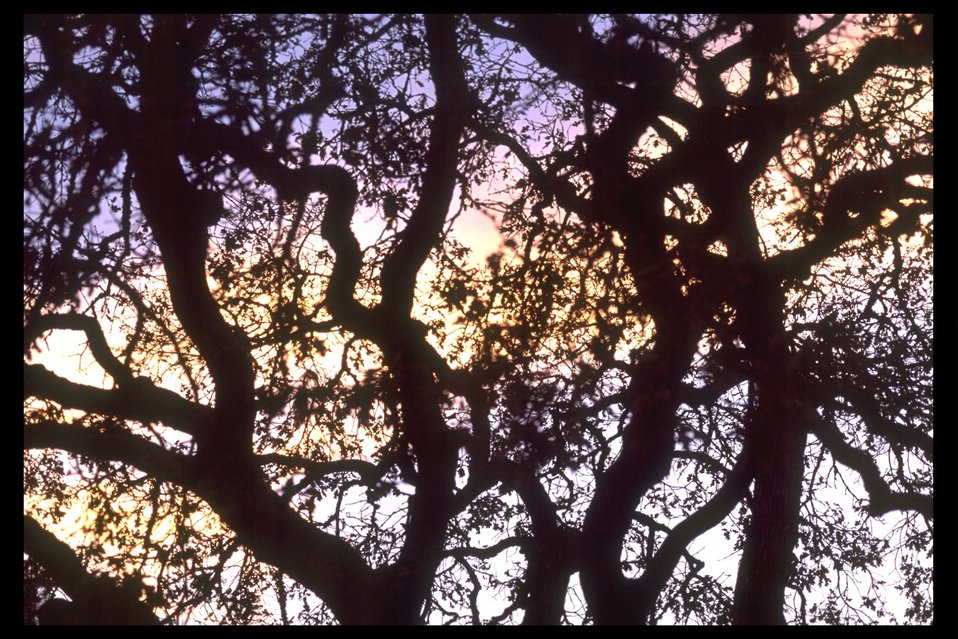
Oak Tree, silhouetted against the evening sky (with contrail) in Modoc Park in Medford.